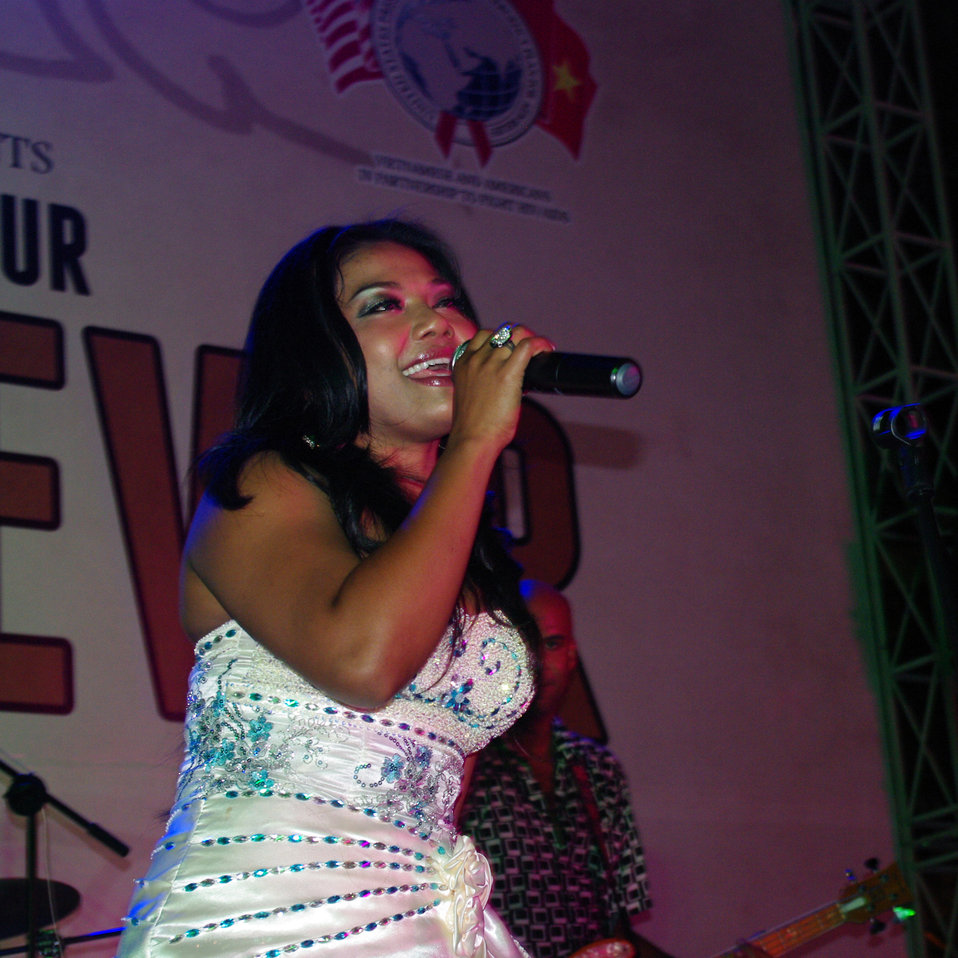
PEPFAR, U.S. Embassy Host Dengue Fever Concert in Hanoi